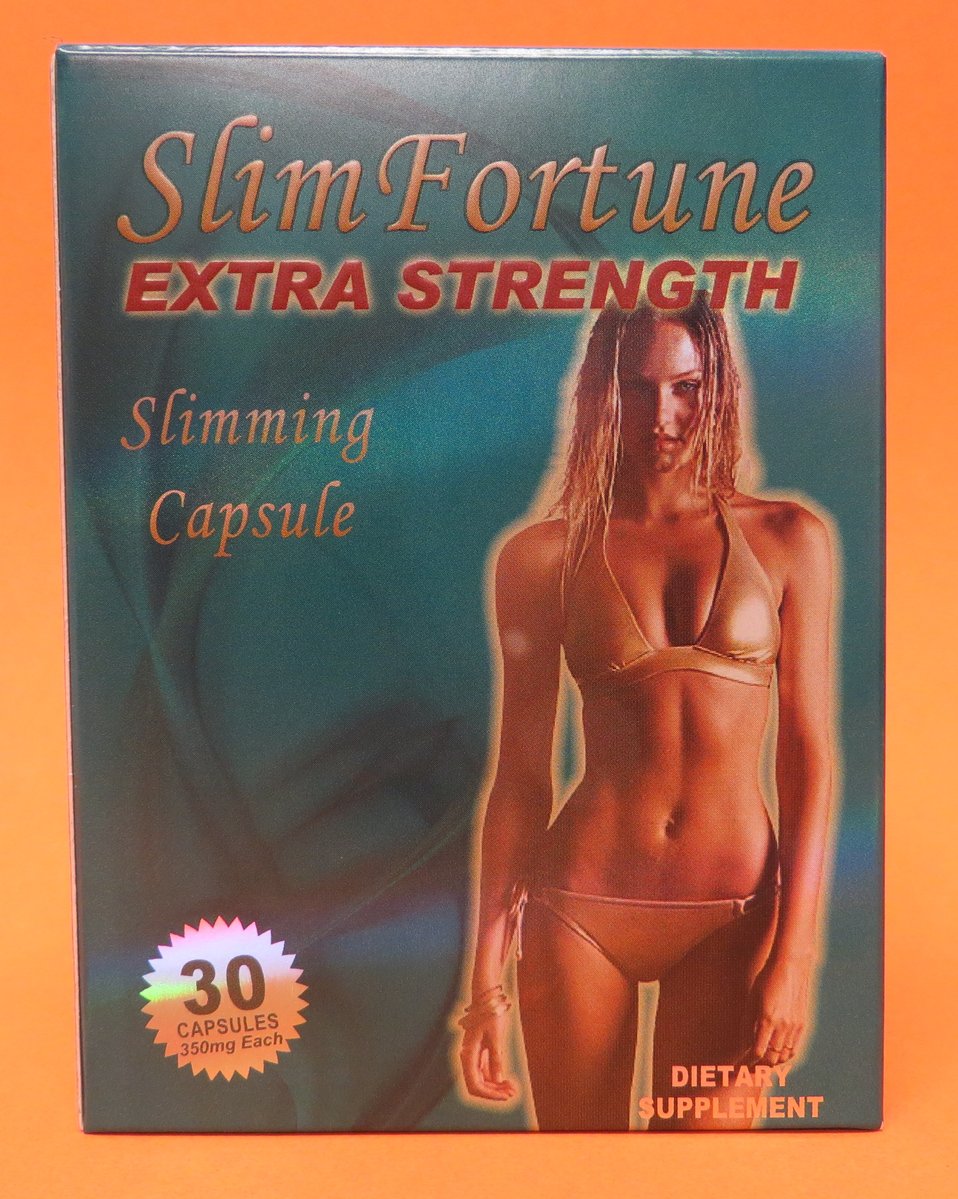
Slim Fortune

October 7, 2013 - The FDA is advising consumers not to purchase or use 'Slim Fortune,' a product promoted and sold for weight loss. The product was found to contain undeclared sibutramine. For more information, go to www.fda.gov/safety/recalls/ucm370884.htm

And read this Consumer Update: Beware of Fraudulent ‘Dietary Supplements’